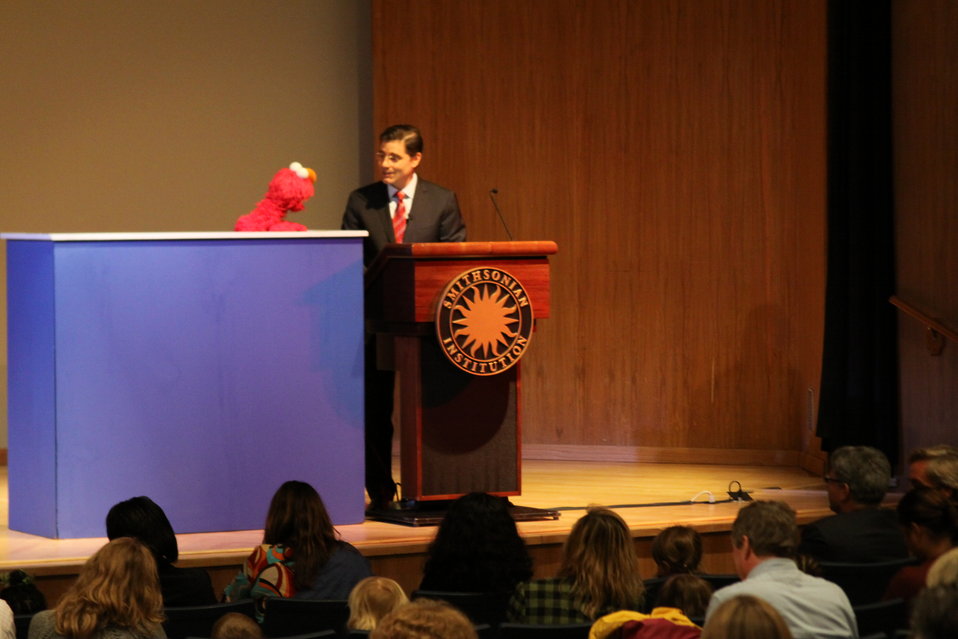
March 12, 2010- Smithsonian Broadband with Elmo